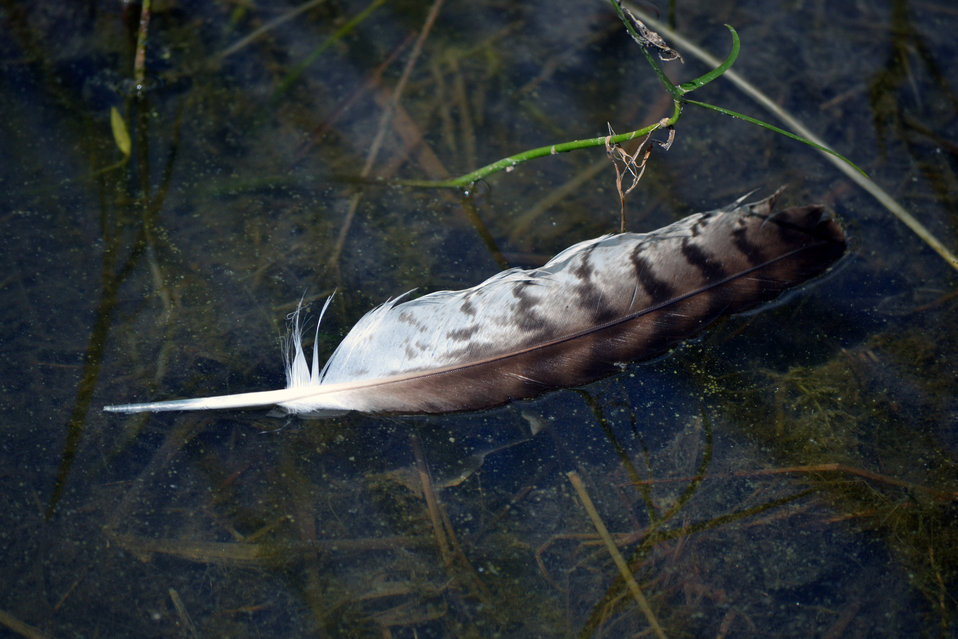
Red-tailed hawk feather shed at Tamarac National Wildlife Refuge.